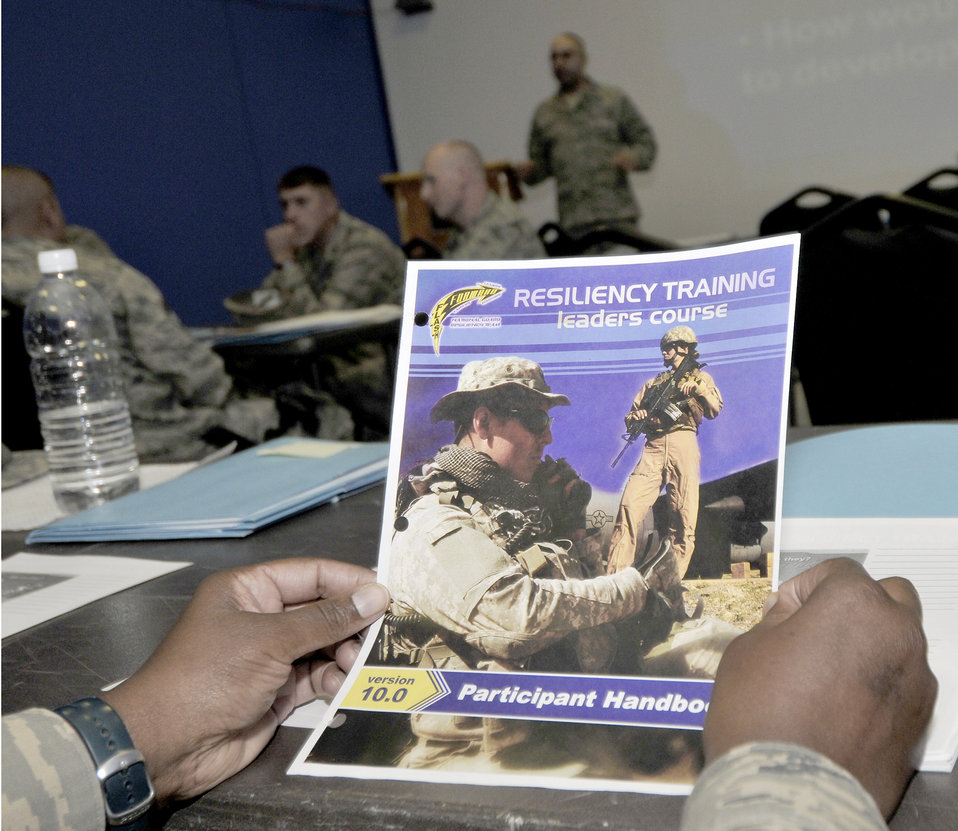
Balad resiliency training

Servicemembers receive resiliency training to help them become better leaders and assist others to deal with high-stress situations by showing them different leadership styles Sept. 14, 2010, at Joint Base Balad, Iraq. The beginning of the program was an orientation of what the program teaches followed by a train-the-trainer session, which focused on delivering messages as an instructor.